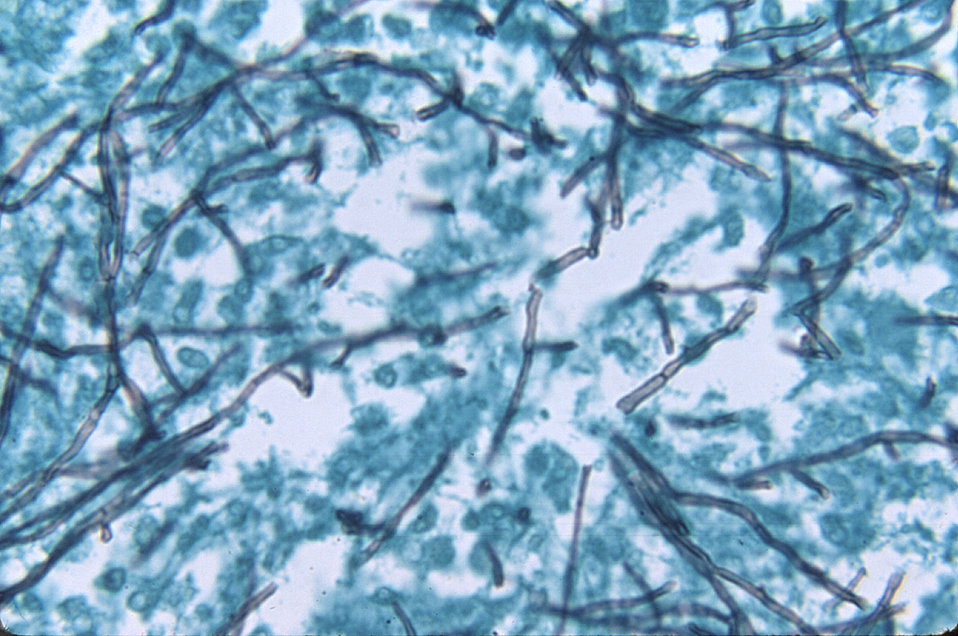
Note the histopathologic changes in a case of phaeohyphomycosis due to E. pisciphilus in this catfish tissue specimen.